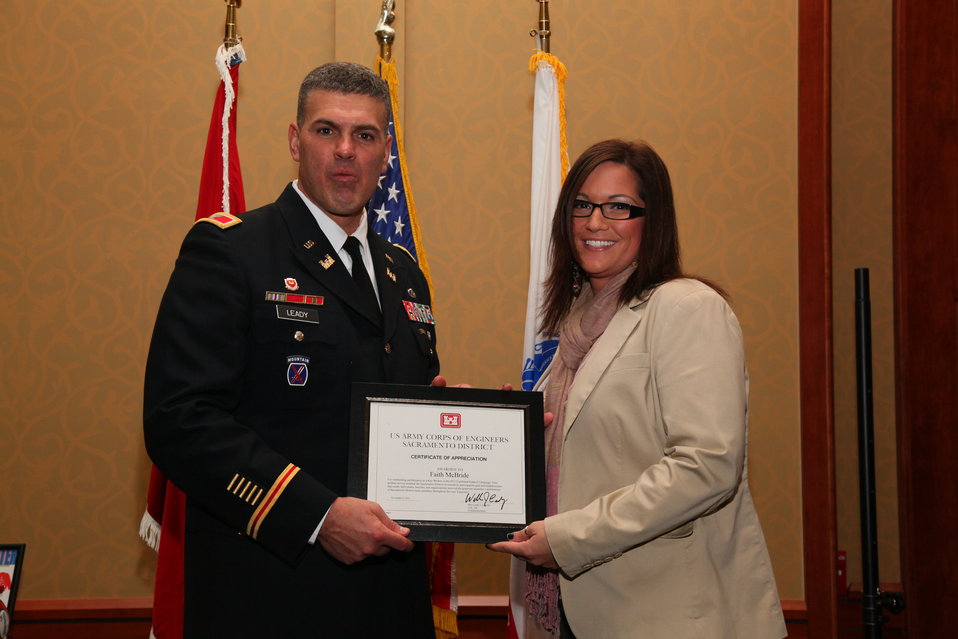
Sacramento District Holiday Party 2011